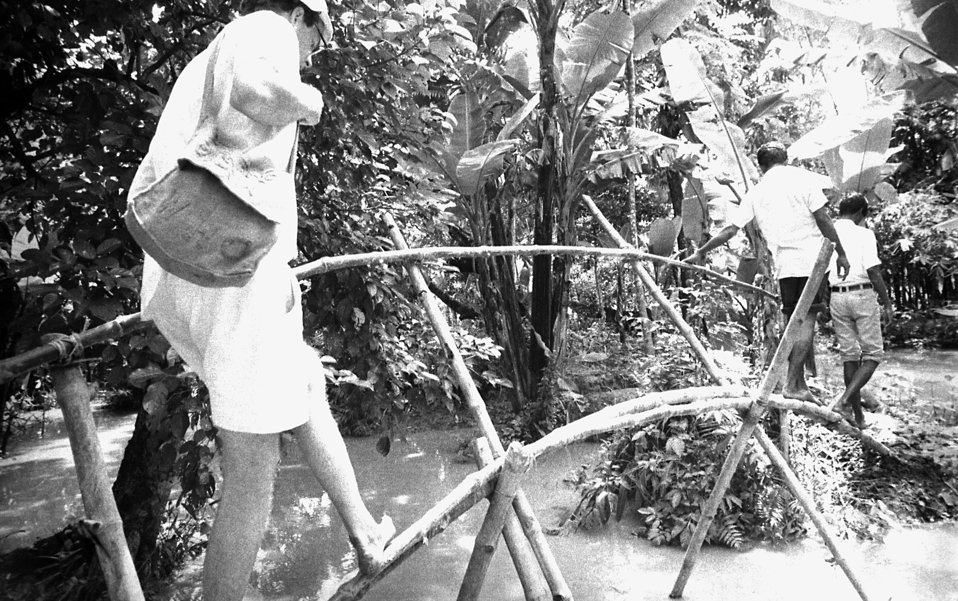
This 1975 image depicted a bamboo-constructed bridge used as an integral tool in daily Bangladesh village life, and was another of the routes eradication team members took when traveling from village to village throughout the waterway traversed nation. In his descriptions of many of these Bangladesh images, former E.I.S. Officer, Stanley O. Foster, M.D., M.P.H., stated that in his travels through Bangladesh during these eradication efforts of the 1970s, as he was traversing these bamboo bridges he actually fell from three of them into the river they were traversing. One of them broke under his weight. This bridge-walking eradication team member was seen here carrying a 'Smallpox Zero Bag', which carried the example pictures of smallpox cases, the bifurcated needles, and the smallpox vaccine.